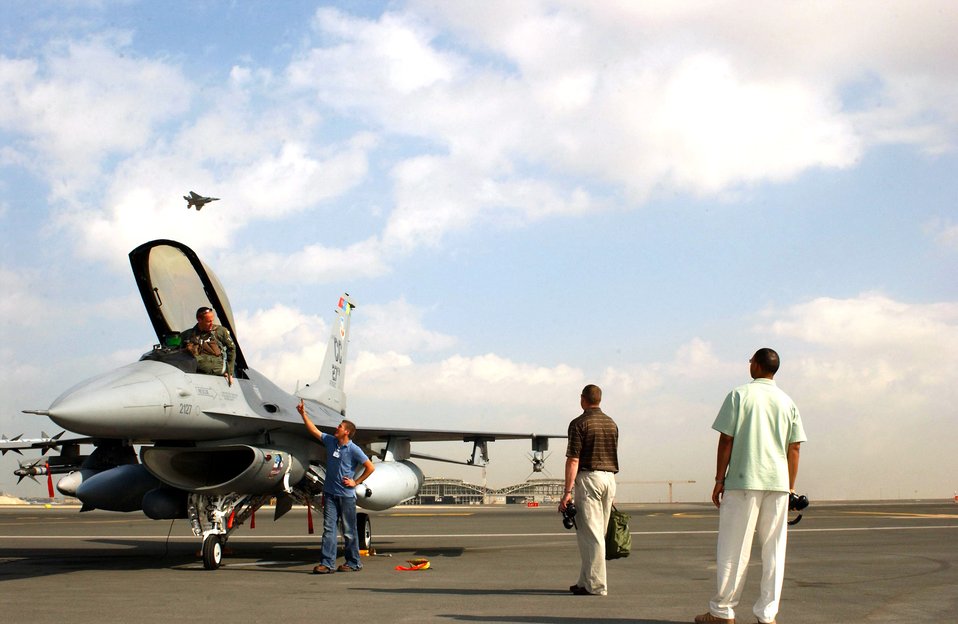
Performing in Dubai

DUBAI, United Arab Emirates (AFPN) -- Capt. Michael Dietrich is greeted by Senior Airman Robert Wince, Capt. Clinton Waller and Master Sgt. Vincent Phillips as he returns from completing his warm-up maneuvers.